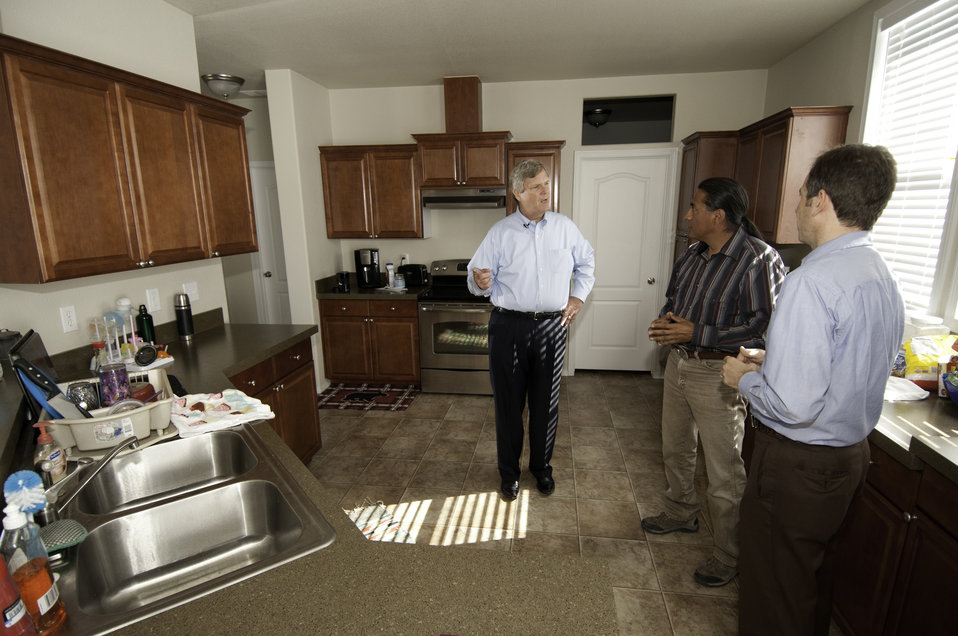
Agriculture Secretary Tom Vilsack meets with New Mexico producers and community stakeholders to highlight the U.S. Department of Agriculture’s (USDA) StrikeForce Initiative opportunities and the importance of comprehensive immigration reform in Albuquerque, NM on Thursday, Jun. 20, 2013.